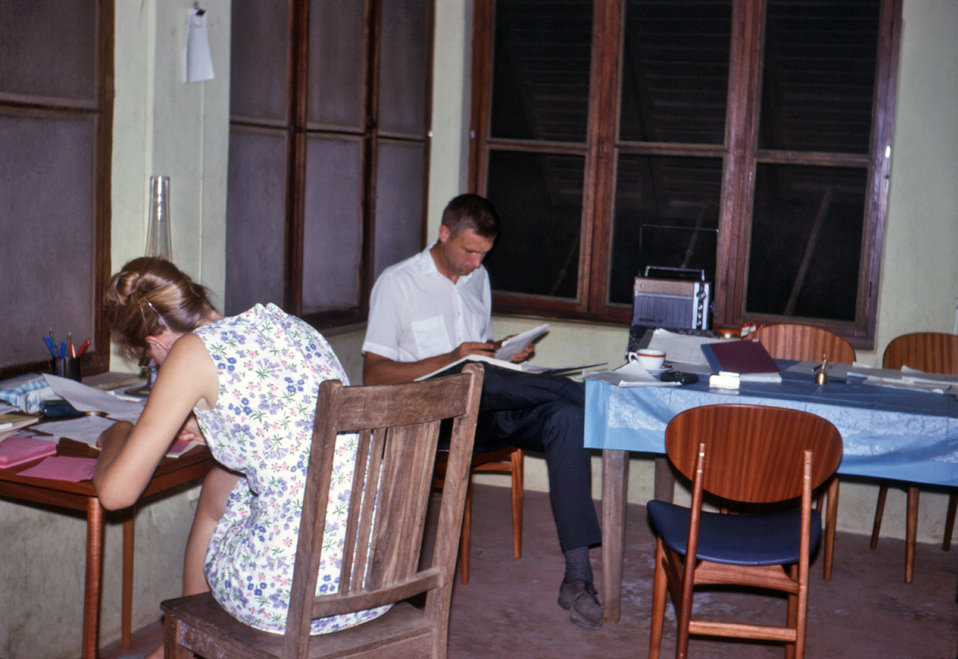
This 1968 photograph depicted former CDC Director, William H. Foege, M.D., M.P.H., and Anne Voigt in a refugee camp office that had been set up during the Nigerian-Biafran war.